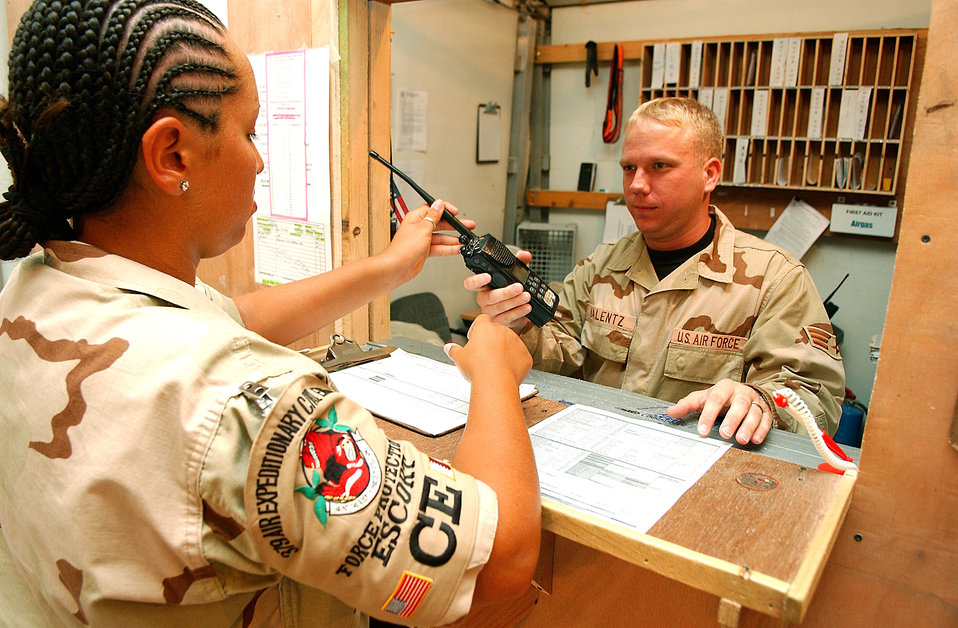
Escorts serve as base's second line of defense

SOUTHWEST ASIA -- Senior Airman Aaron Valentz checks out a land-mobile radio to another escort. He is a 379th Expeditionary Civil Engineer Squadron escort.